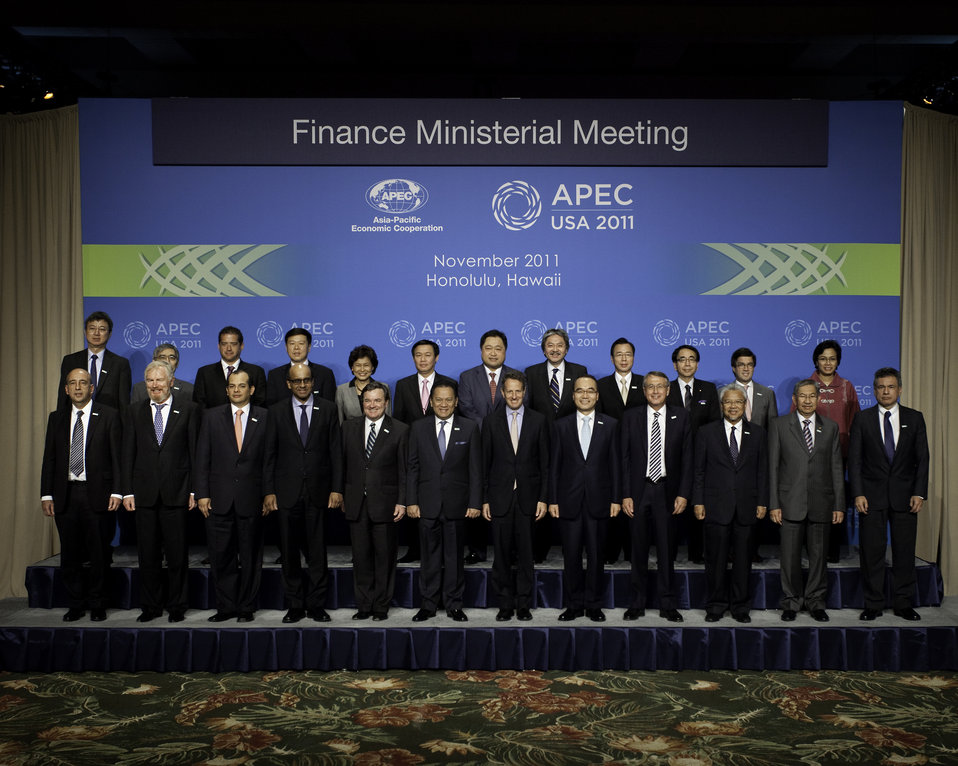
APEC Meeting of Finance Ministers

APEC Finance Ministerial Meeting family photo.